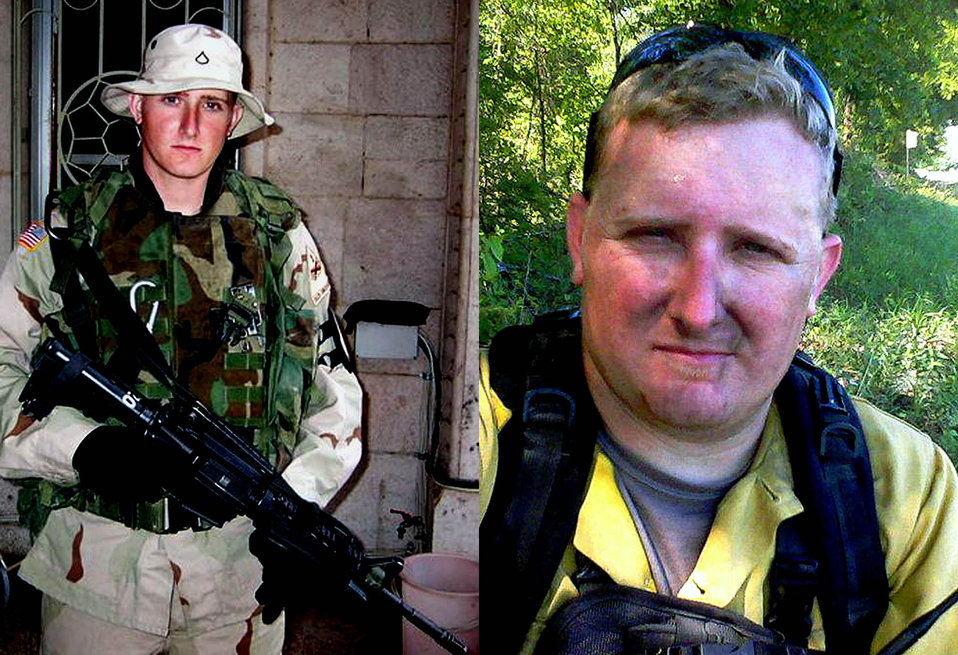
Tommy Crews.
Tommy Crews served with the U.S. Army for three years as a combat engineer, enlisting in March of 2002. He completed basic training at Ft. Leonard Wood, MO, and served with the 40th Engineer Battalion, 1st Armored Division in Baumholder, Germany. He deployed to Iraq from April 2003 to July 2004. .
.
He finished his military commitment at Ft. Campbell, KY, and received an Honorable Discharge in 2005. .
.
Crews is now a Forestry Technician at Okefenokee NWR in southeast Georgia. His duties include prescribe burning, boundary marking, timber marking, and managing for RCW habitat. He started at Oke back in November of 2010 and really enjoys it..
“Oke is a great place to work, plus I’m from this area so it feels like home!” said Crews. “I’m glad to continue to serve this great country working with the U.S. Fish and Wildlife Service.”